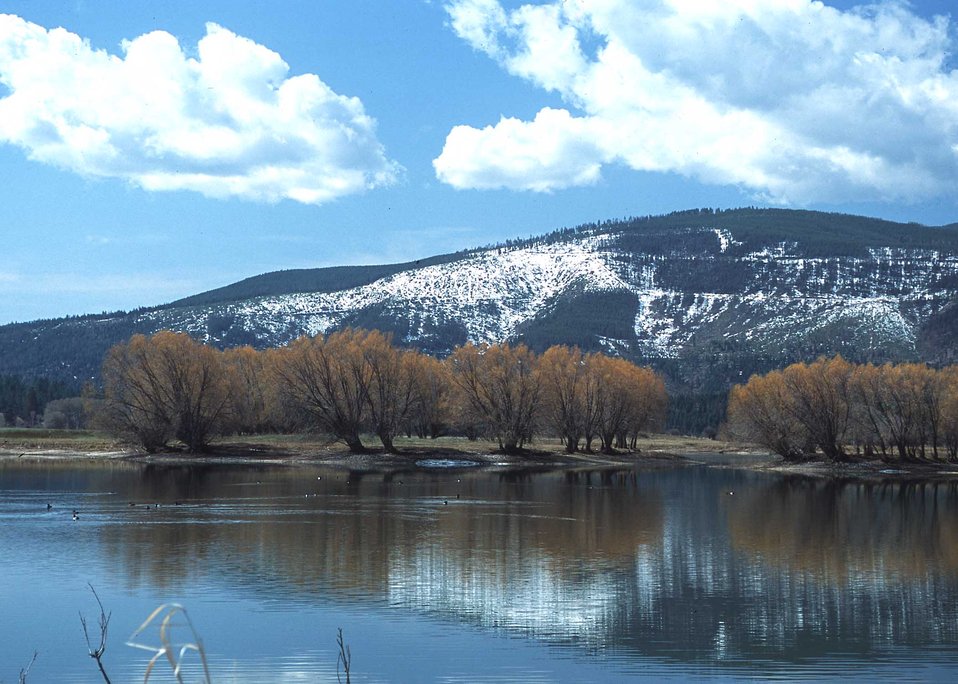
Wetlands in scenic northcentral Montana.